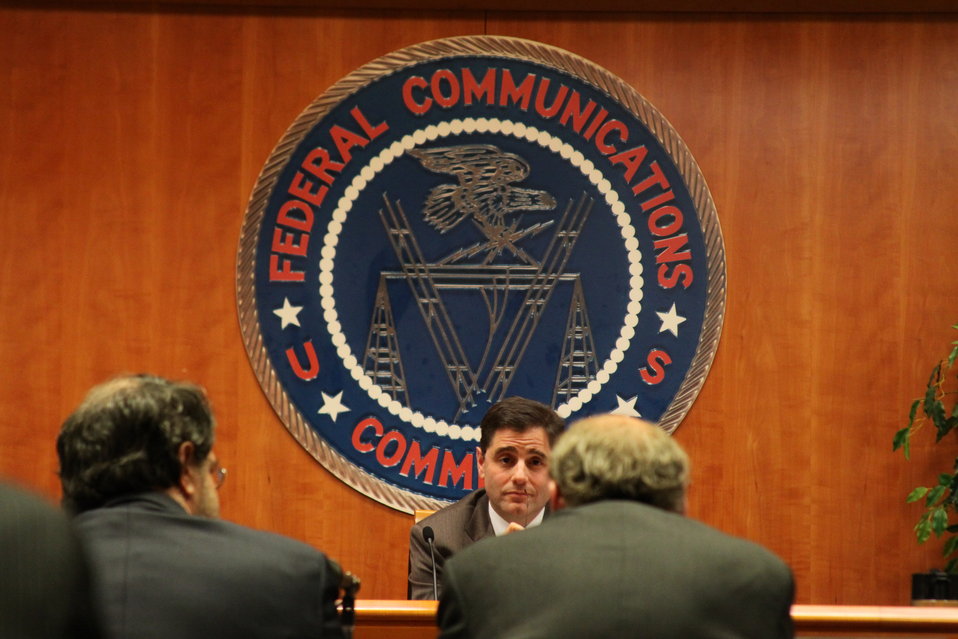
Open Commission Meeting - 2/18/2010

The Federal Communications Commission will hold an Open Meeting in Washington, DC. on February 18, 2010, which will include the following items:

E-Rate: An Order and Notice of Proposed Rulemaking to enable schools that receive funding from the E-Rate program to allow members of the general public to use the schools' Internet access during non-operating hours at no additional cost to the Universal Service Fund. This order and notice do not permit or require any changes to E-Rate applications due on February 11, 2010; Ex Parte Reform: A Notice of Proposed Rulemaking to improve the transparency and effectiveness of the FCC's decision-making process by reforming the ex parte rules; Procedural Reform: A Notice of Proposed Rulemaking to enhance the efficiency, openness, and transparency of the Commission's proceedings by improving and modernizing certain organizational and procedural rules; National Broadband Plan Status Report: Commission staff will report on the status of the National Broadband Plan, providing a framework for the national purposes portion of the Plan.